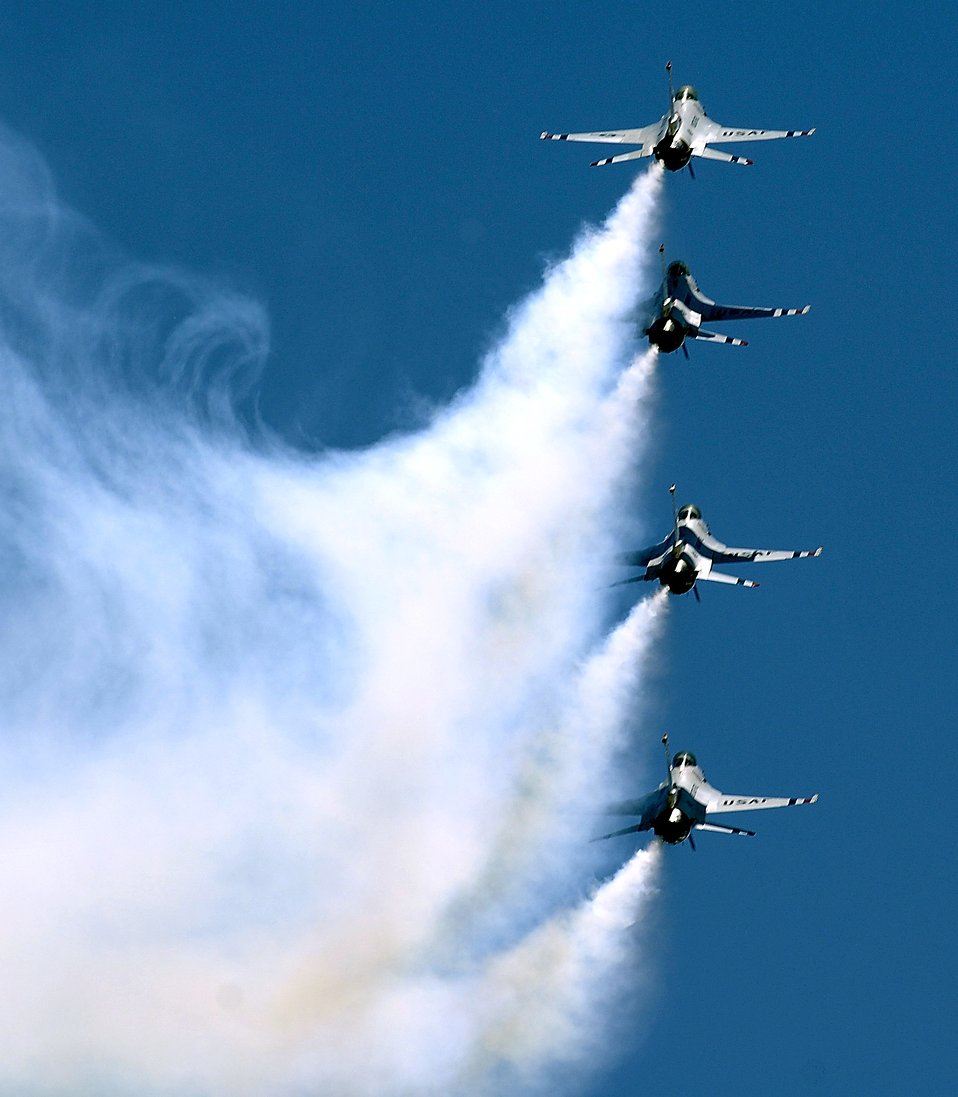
Precision flying at its best

The U.S. Air Force Thunderbirds fly in formation over California in preparation for an upcoming air show. The Thunderbirds are the Air Force's premier demonstration squadron and represent the Air Force throughout the nation and abroad.